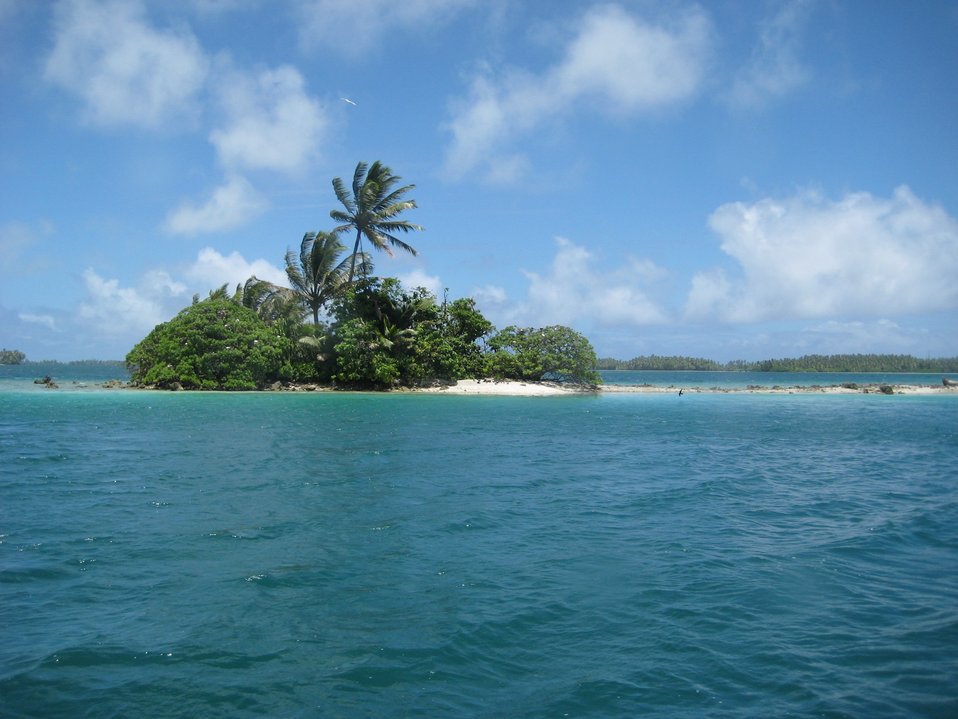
A tropical islet